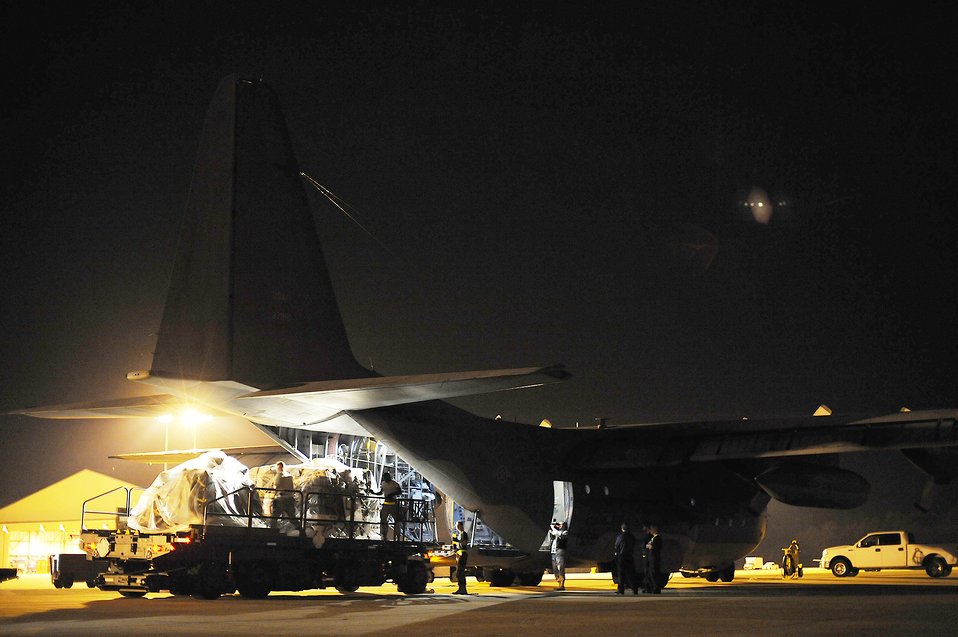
Load and go

Airmen from the 1st Special Operations Wing load cargo into a C-130 Hercules from the 6th Special Operations Squadron, Nov. 8, 2009, at Hurlburt Field, Fla. Hurlburt Field aircraft were evacuated as Hurricane Ida approached the Gulf Coast region